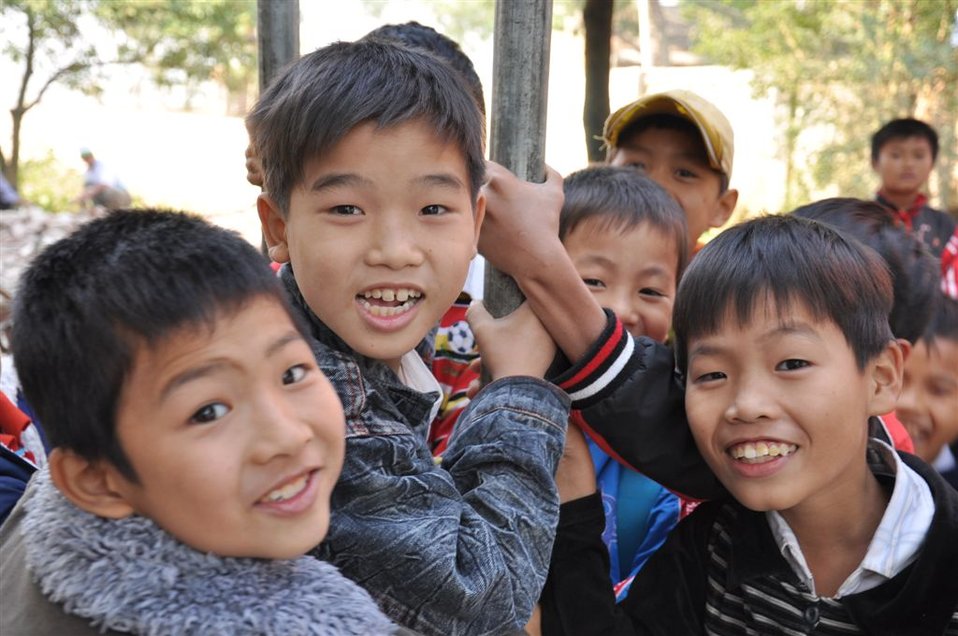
USAID provides household kits to families affected by flooding near Hanoi